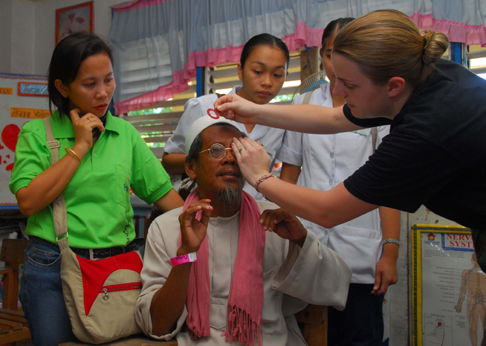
Pacific partnership mission

Senior Airman Kate Thomas assists a patient in finding a suitable pair of eye glasses June 3 during a Pacific Partnership 2008 medical civic action program held at a school in Cotabato, Philippines. Air Force medics aboard the U.S. Navy Ship Mercy are sailing with her for three months bringing humanitarian and civic assistance to people in various parts of the world. Medical professionals from the Philippines, Canada, Japan and Australia are working side by side with their counterparts providing medical, dental, veterinary and construction assistance programs ashore and afloat.